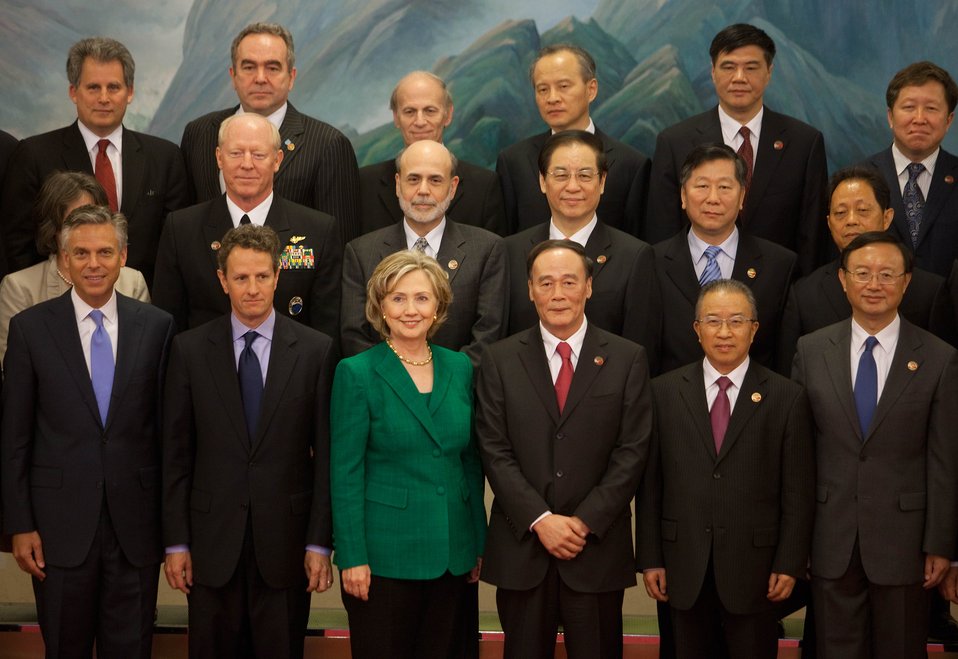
SandED 5/25/10

Secretary Geithner, Secretary Clinton, Vice Premier Wang Qishan and Councilor Dai Bingguo pose for the family photo.